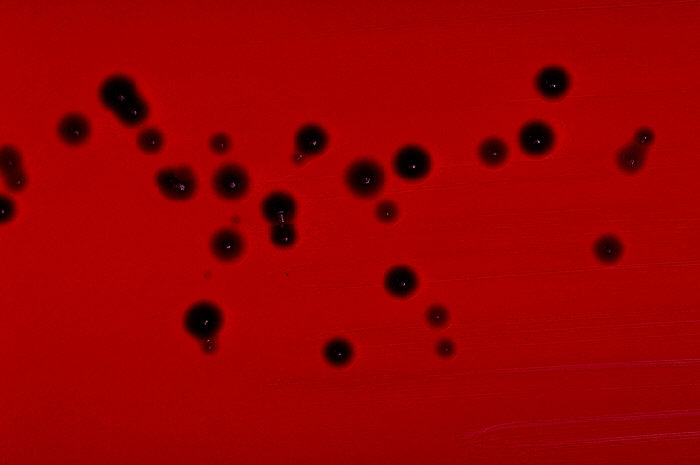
Blood agar plate culture of Chromobacterium violaceum.